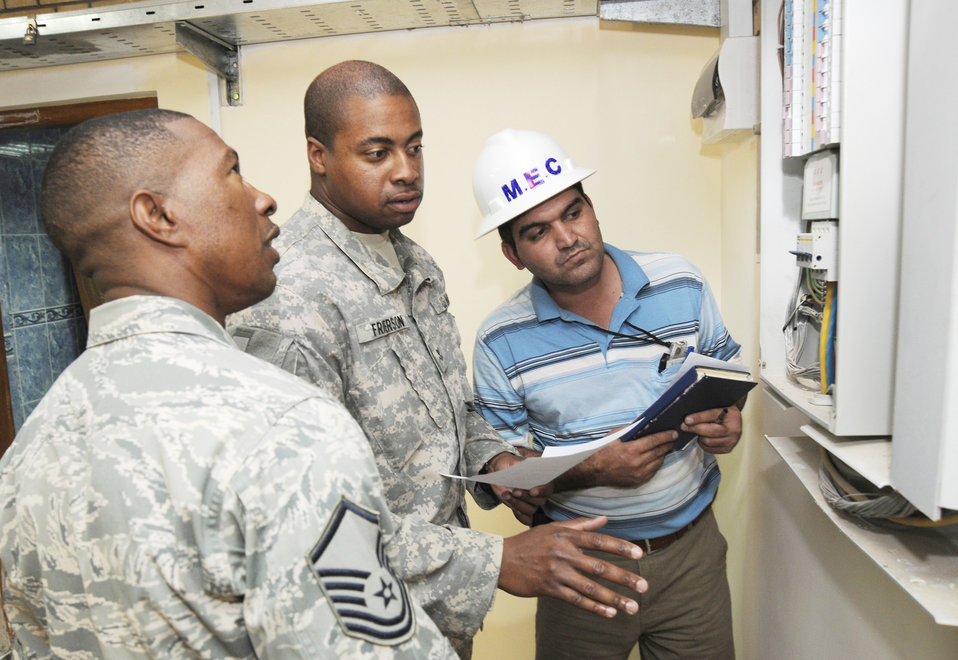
Servicemembers hammer out, nail down Iraqi construction

Master Sgt. Tommy Robinson (left) and Navy Petty Officer 2nd Class Jack Frierson (center) inspect an electrical panel installed by Iraqi contractors during a renovation project in the International Zone Oct. 18, 2009, in Baghdad, Iraq. The NCOs are responsible for ensuring Iraqi contractors awarded construction projects follow contract agreements, safety rules and national electric codes. Sergeant Robinson is deployed from Luke Air Force Base, Ariz., and is a native of Graceville, Fla. Petty Officer Frierson is deployed from Norfolk Naval Air Station, Va., and hails from Kingtree, S.C. The two are joint area support group department of public works Team 2 NCOs.